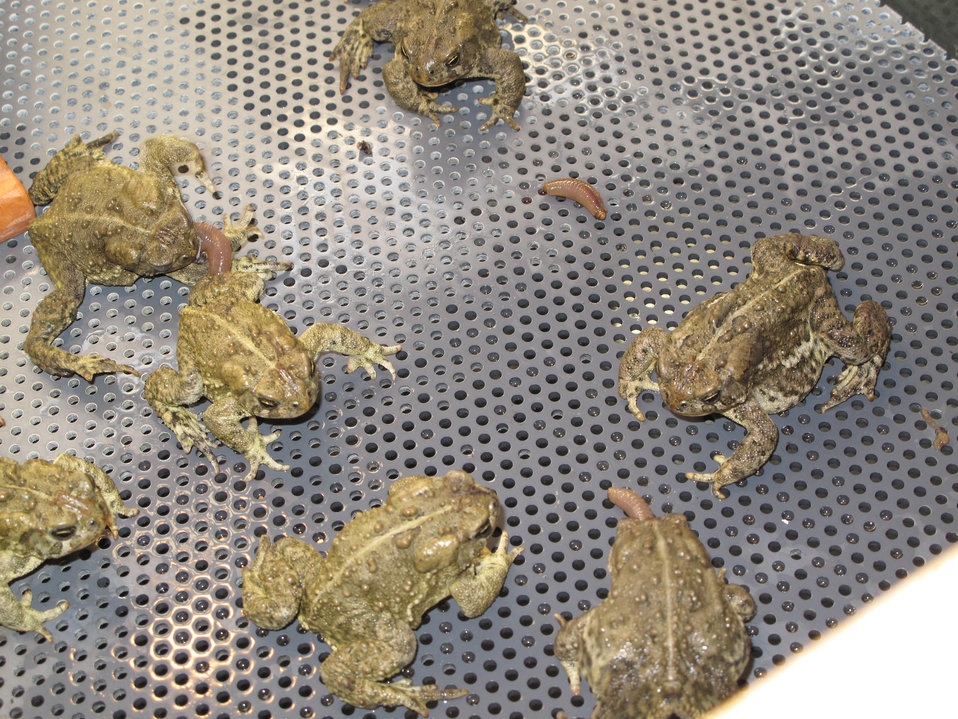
Wyoming Toads at Saratoga NFH

They are given live prey to learn basic wilderness skills.